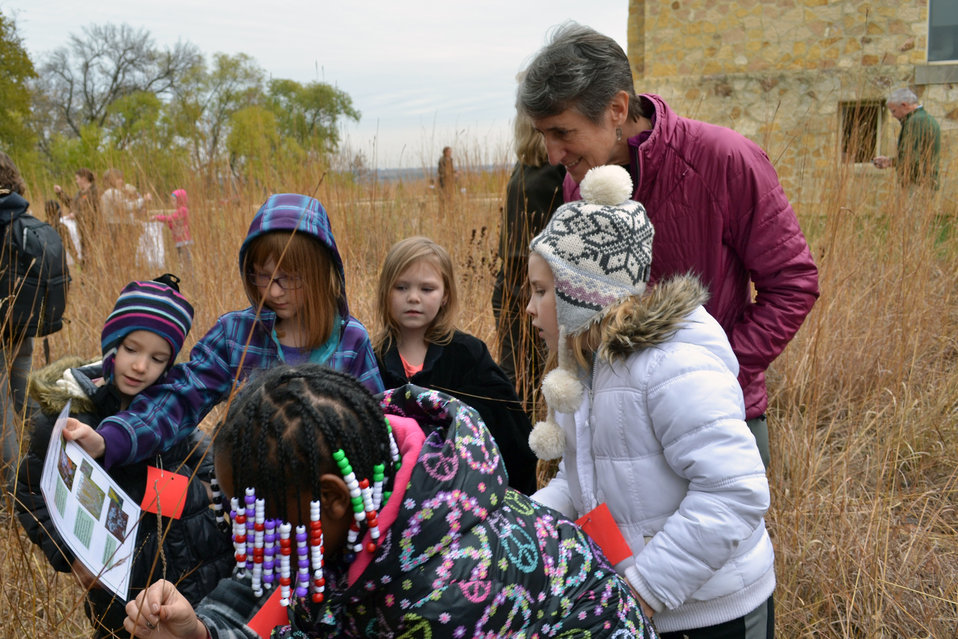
Native Seed Collection

Secretary Sally Jewell helped Minneapolis second graders collect native prairie seeds during her visit to Minnesota Valley National Wildlife Refuge.